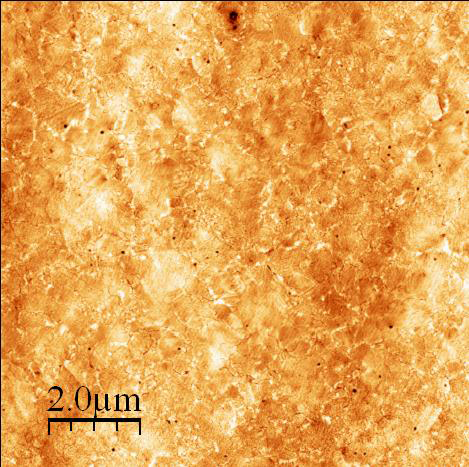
Molecular Electronics

The flip-chip lamination method creates an ultra-smooth gold surface, which allows the organic molecules to form a thin yet even layer between the gold and silicon.